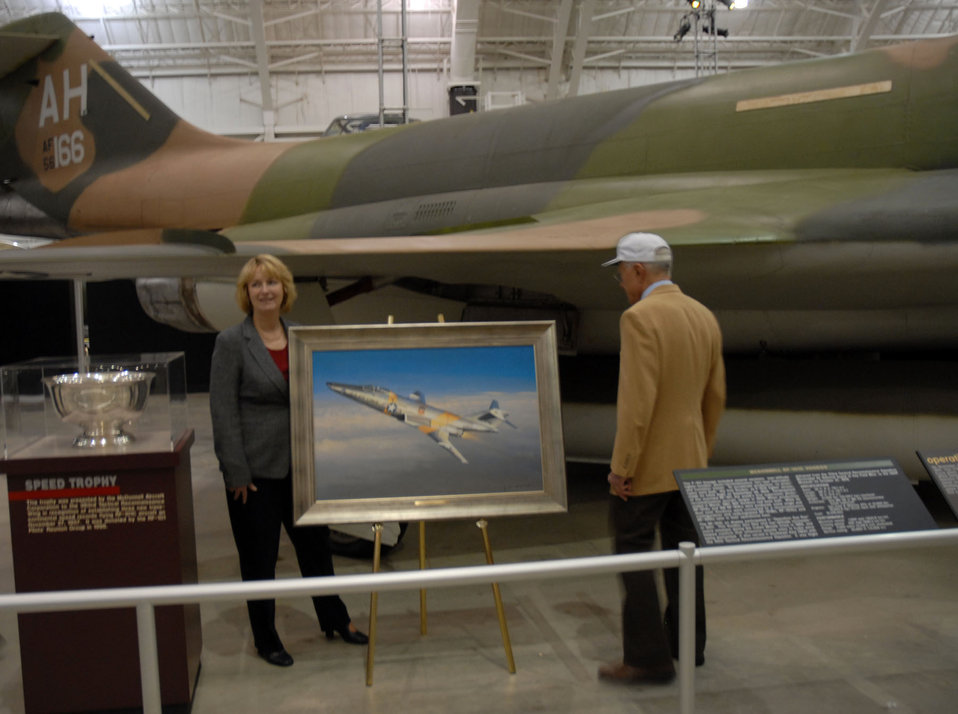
50th anniversary of significant Air Force mission remembered

Cindy Miller (left), daughter of Col. Ray Schrecengost, the pilot of the RF-101C